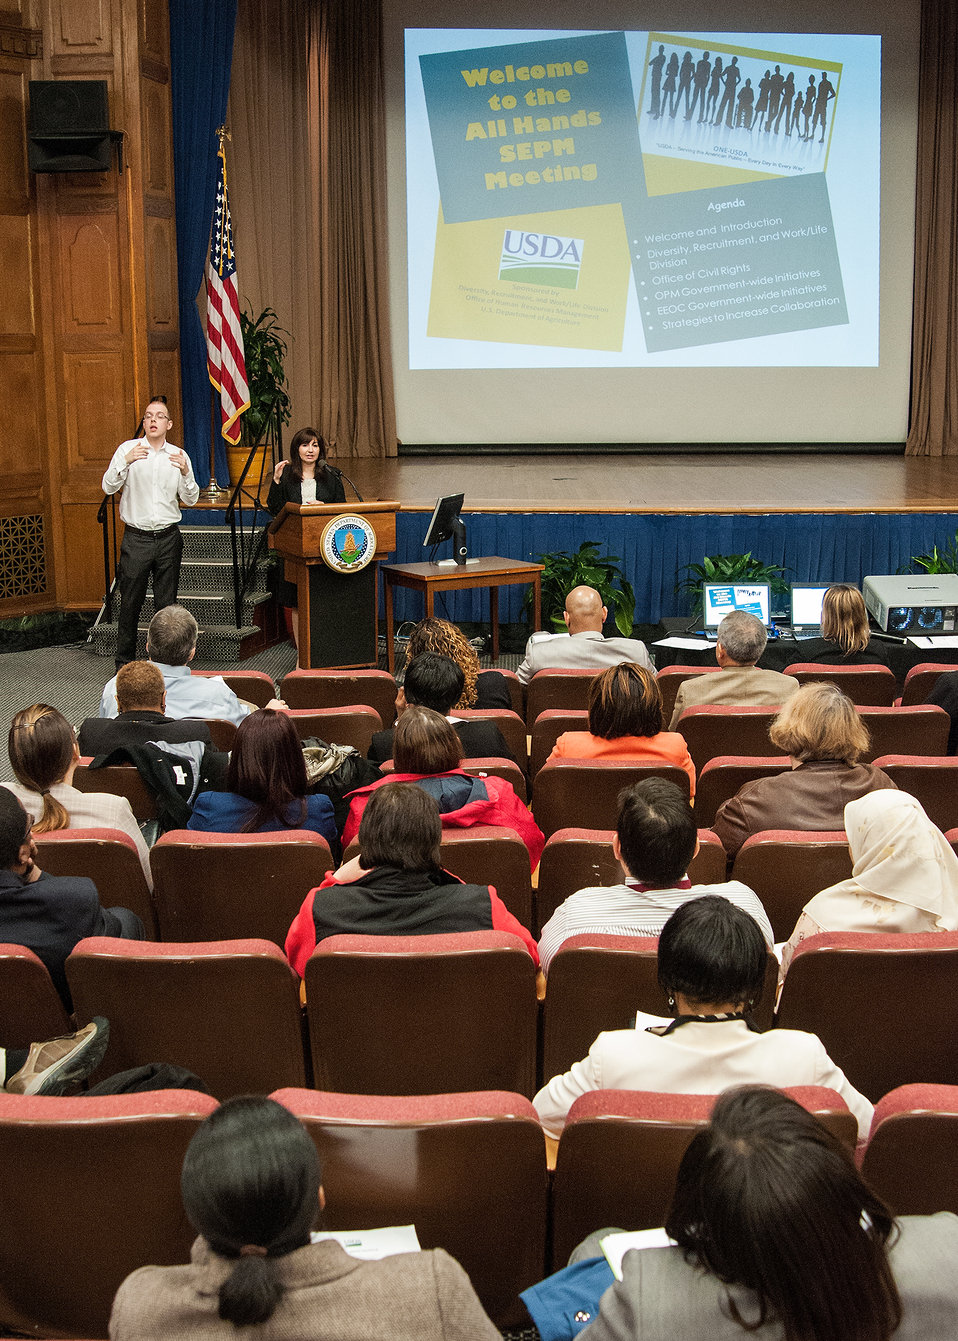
U.S. Office of Personnel Management (OPM) Office of Diversity and Inclusion Director Veronia Villalobos discusses OPM Government Wide Initiatives at the First Annual All Hands Special Emphasis Program Managers (SEPM) Meeting at the U.S. Department of Agriculture Jefferson Auditorium in Washington, D.C. on Wednesday, Mar. 13, 2013.